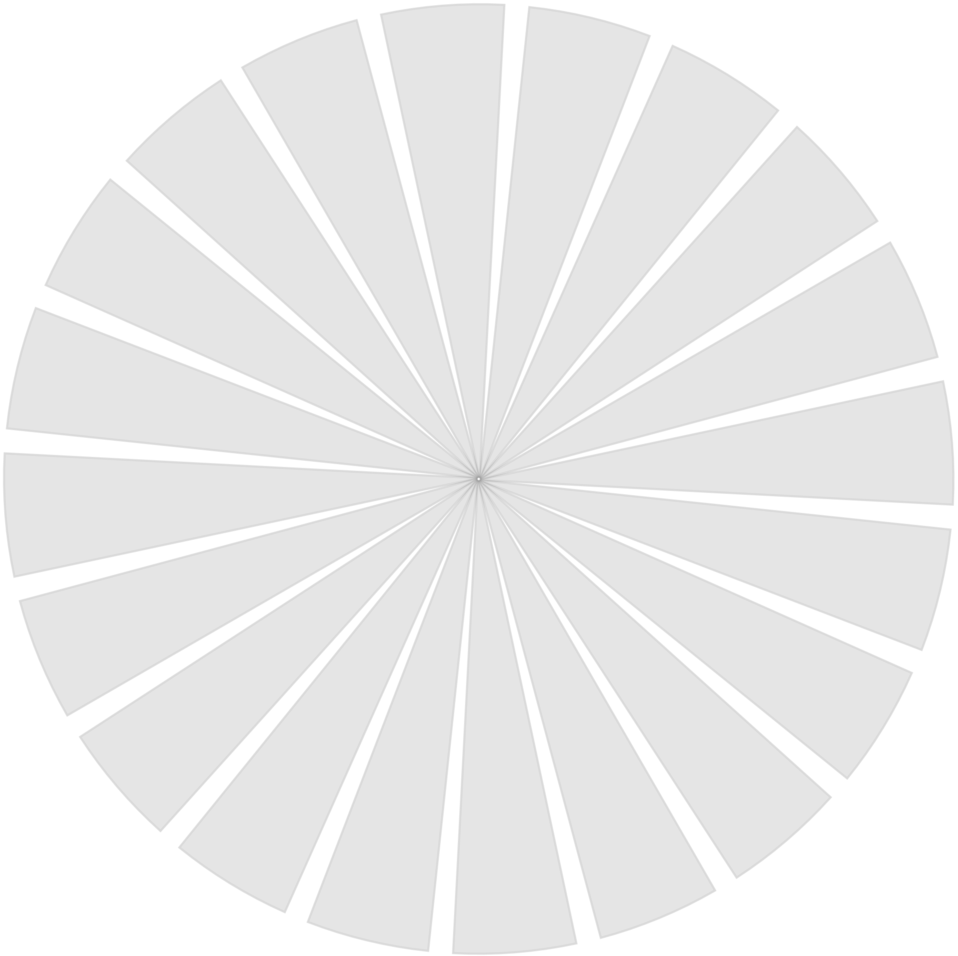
0proc